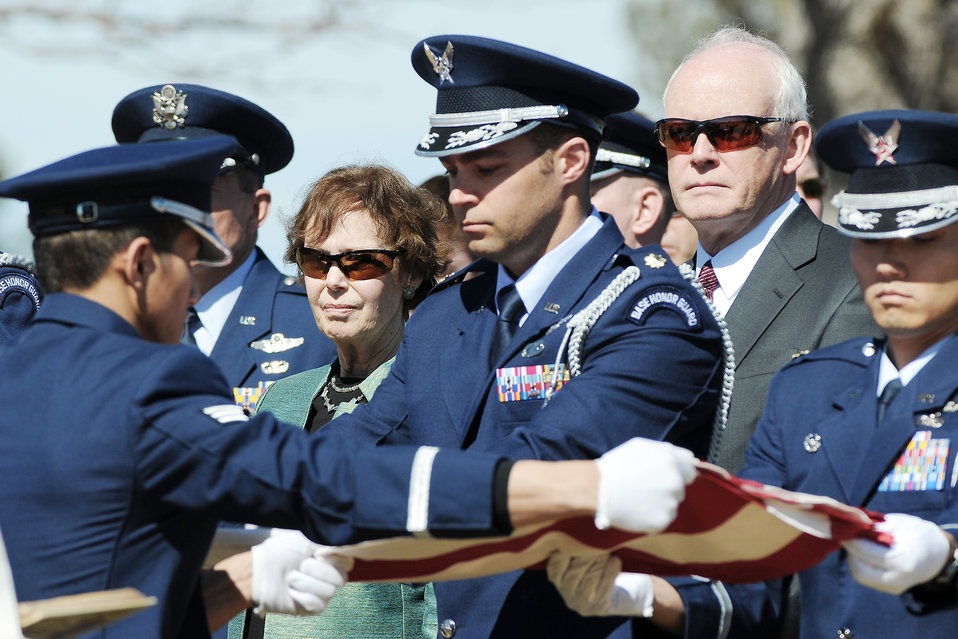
General Clark honored with service

Family members of Lt. Gen. A.P. Clark watch as the Base Honor Guard folds the American flag during a graveside service March 17, 2010, at the U.S. Air Force Academy Cemetery in Colorado. General Clark, who was the Academy's sixth superintendent from Aug. 1, 1970 to July 31, 1974, was a 1936 graduate of West Point and went on to a flying career after graduation. He spent 33 months as a prisoner of war after getting shot down flying a British Spitfire over Abbeville, France, in July 1942.